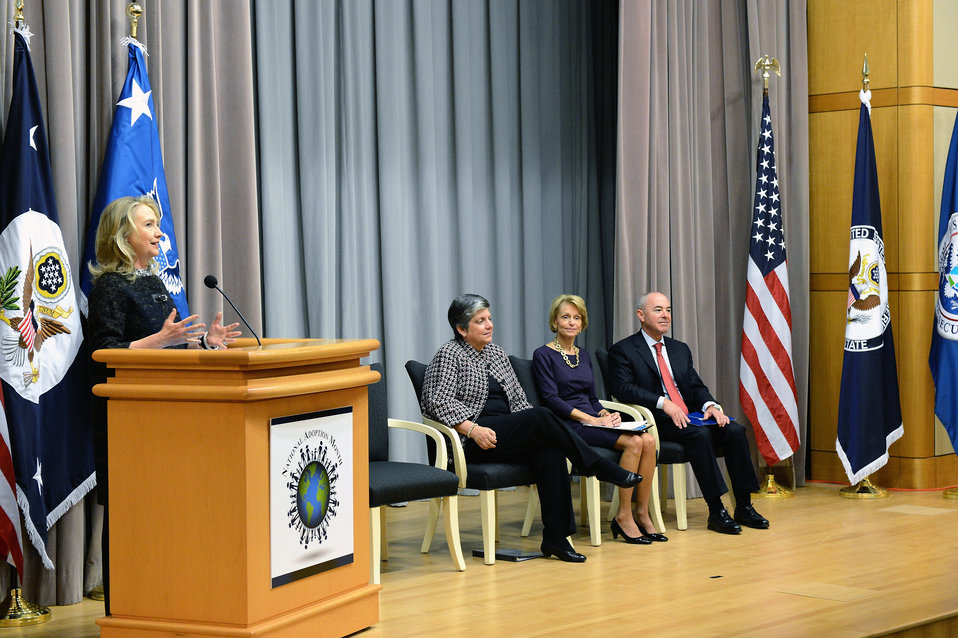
Secretary Clinton Delivers Remarks at the Presentation of Certificates of U.S. Citizenship

U.S. Secretary of State Hillary Rodham Clinton delivers remarks at the Presentation of Certificates of U.S. Citizenship at the Department of State’s National Adoption Month event at the U.S. Department of State in Washington, D.C., November 8, 2012.